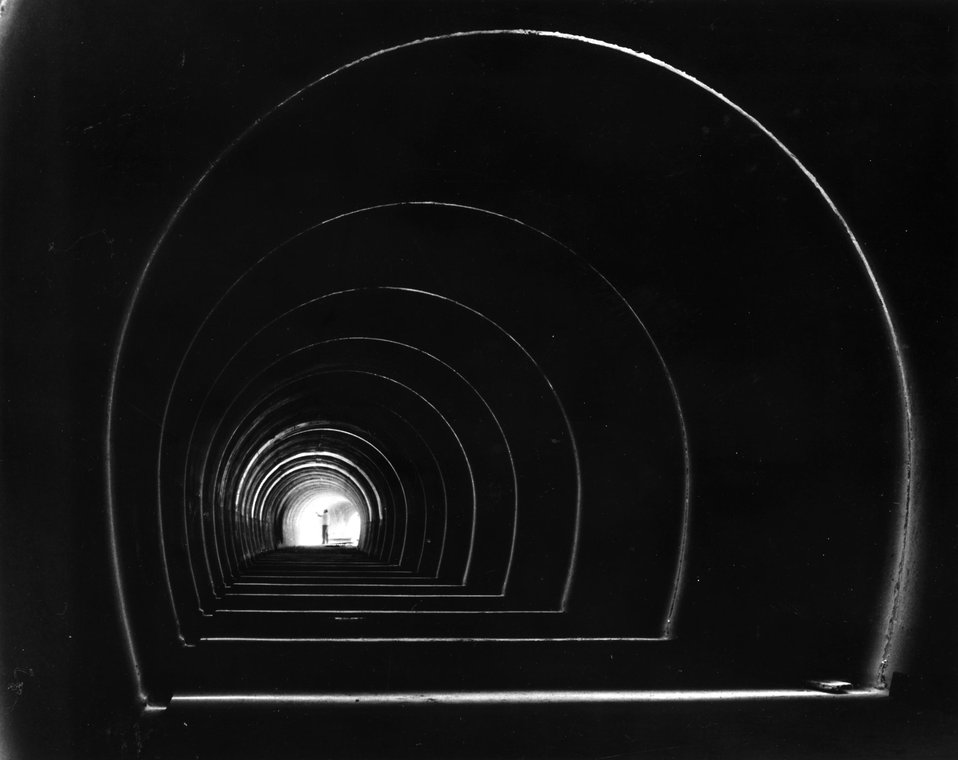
Precast concrete sections are fitted into place after being deposited in position by a special handling vehicle at the AEC NAL. c.1970